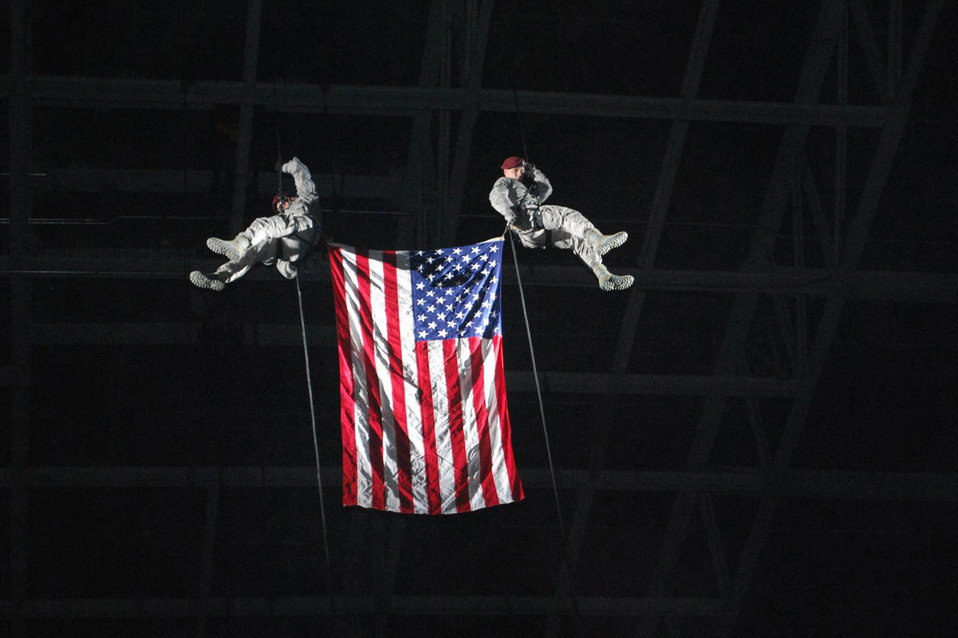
Rappelling stars and stripes

Master Sgt. Robbie Bean and Senior Airman John Ostrowske rappel with the American flag during the opening ceremony of an Arenacross 2009 series dirt bike race event in Dayton, Ohio. Both Airmen are pararescuemen from Wright-Patterson Air Force Base, Ohio.